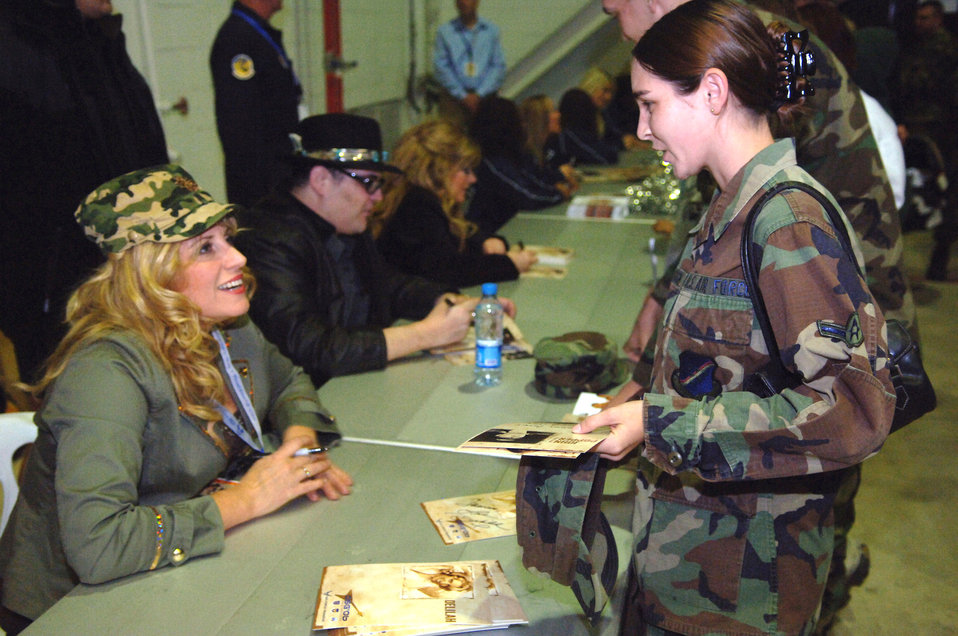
Performers bring holiday cheer to the 'Lik'

Airman Shannon Puterbaugh receives an autograph from radio personality Delilah after the Operation Season's Greetings concert at Incirlik Air Base, Turkey, Nov. 22. Airman Puterbaugh is assigned to the 39th Logistics Readiness Squadron.